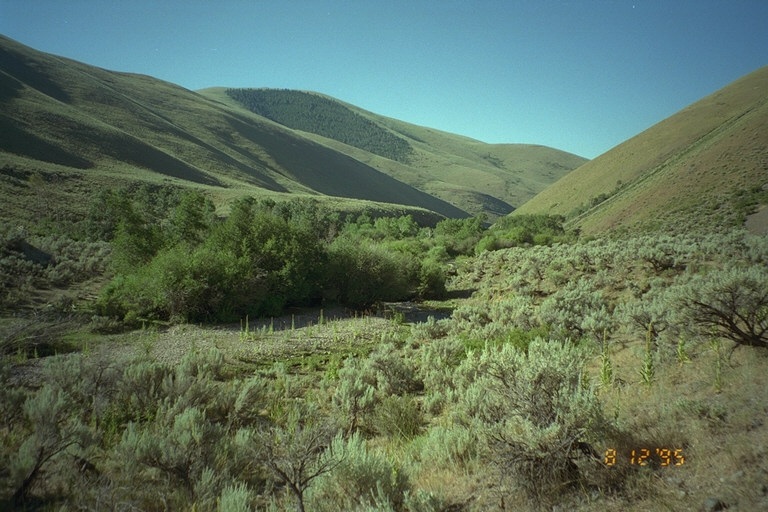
Riparian area Public Lands Salmon Field Office UCSC Upper Columbia Salmon Clearwater District